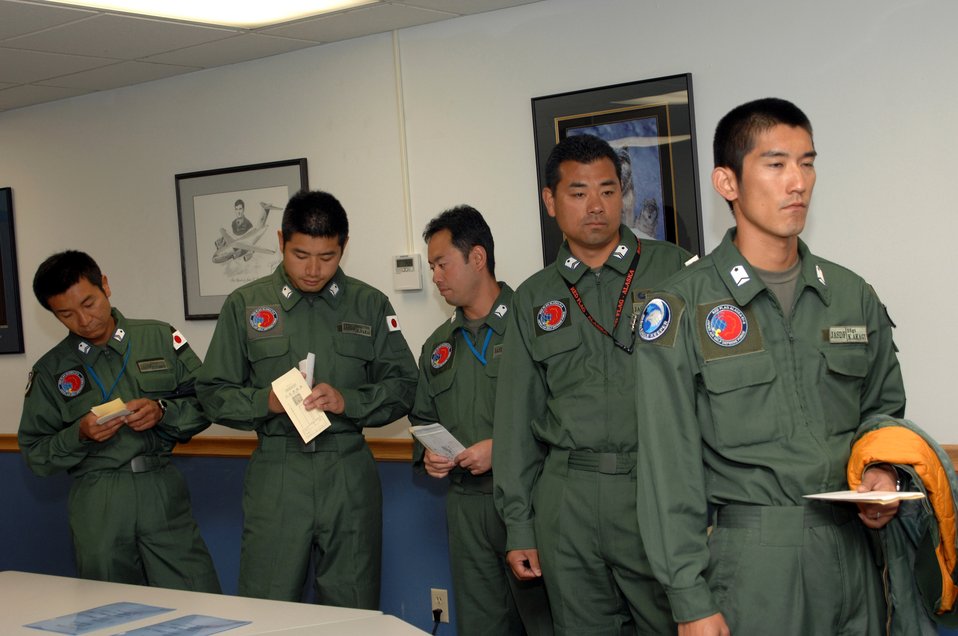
Japanese absentee voting at Red Flag-Alaska

The members of the Japan Air Self-Defense Force's 7th Air Wing, at Eielson Air Force Base, Alaska, to participate in Red Flag-Alaska 07-3, were able to vote in their country's official elections July 23rd at an absentee voting area set up on the base.